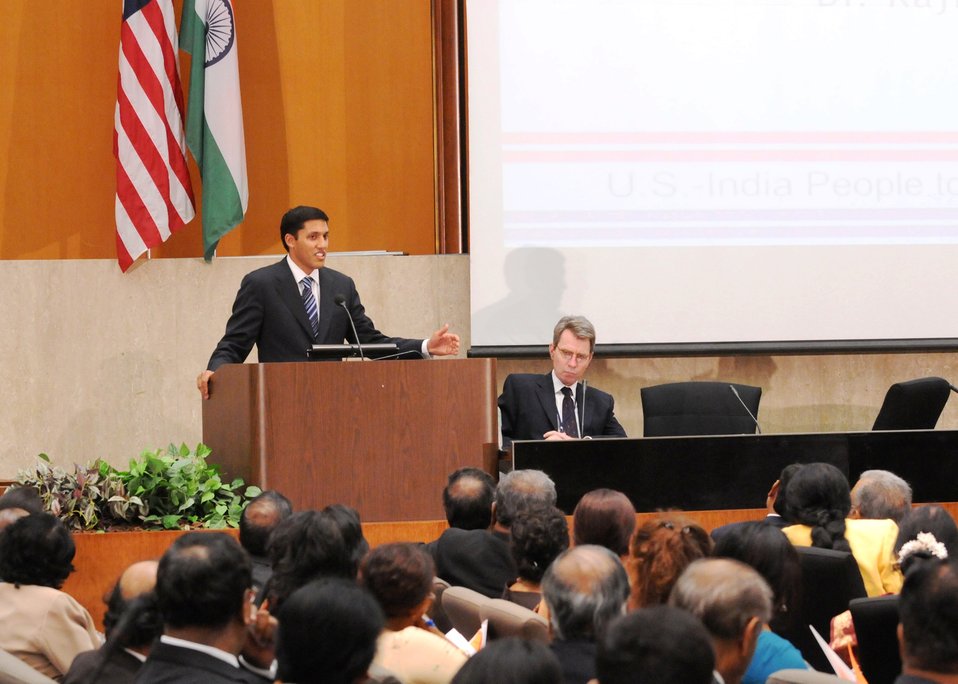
USAID Administrator Shah Delivers the Keynote Address

USAID Administrator Dr. Rajiv Shah delivers keynote address at the U.S.-India People to People Conference held at the U.S. Department of State in Washington, D.C., on October 28, 2010. Principal Deputy Assistant Secretary for Bureau of South and Central Asian Affairs Geoffrey Pyatt is to the right of Administrator Shah.